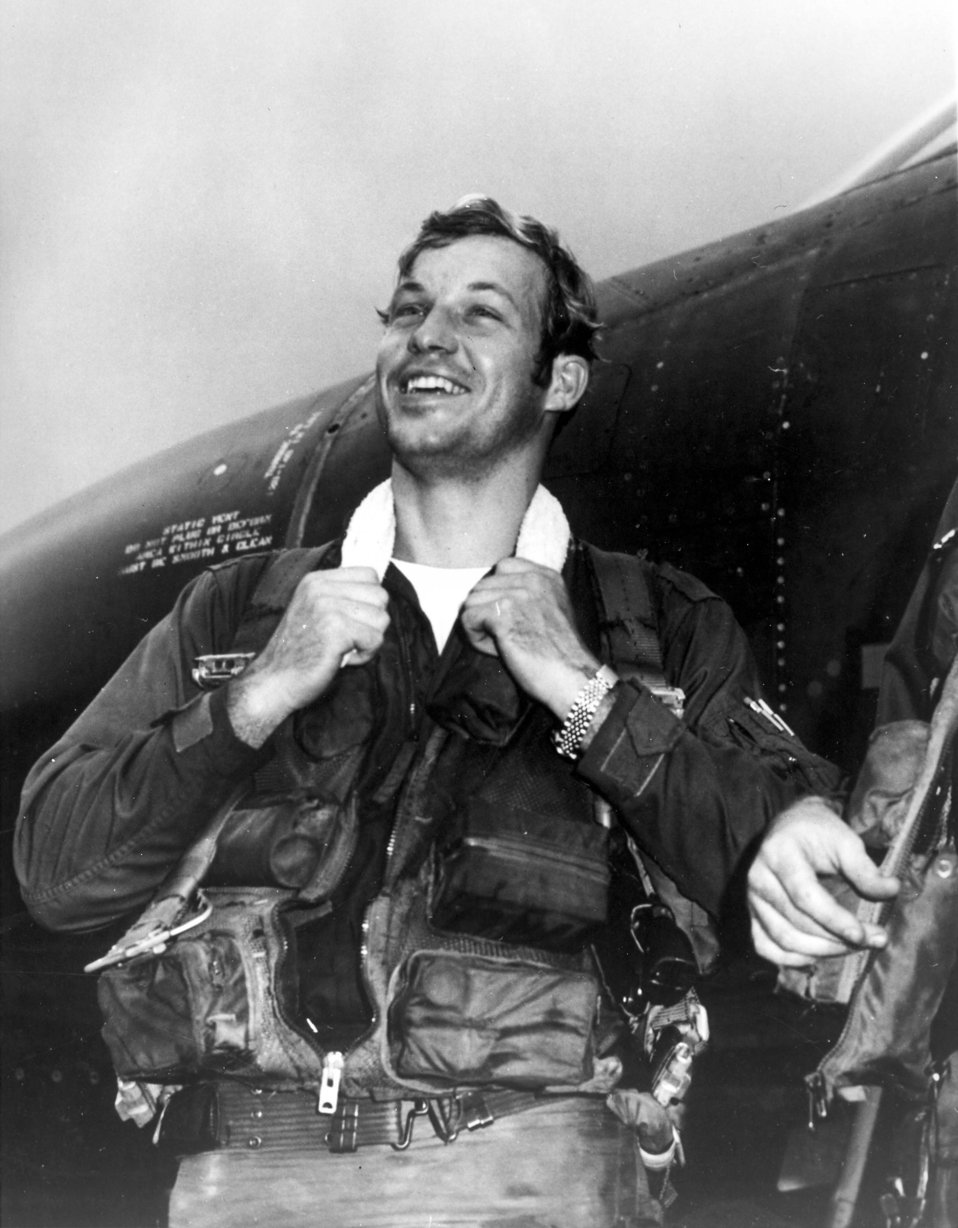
Richard S. Ritchie

1970's -- Capt. Richard S. Ritchie, in South Vietnam - 1972, with 555th Tactical Fighter Squadron, is pictured beside his aircraft following the mission in which he became the first Air Force ace of the Vietnam conflct.